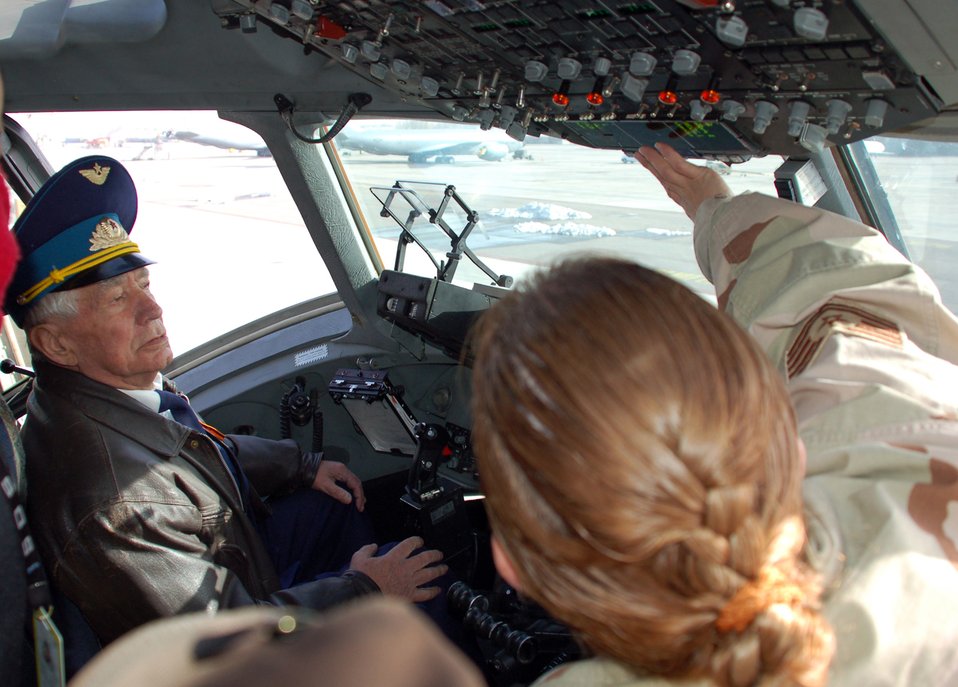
Airmen, 'Great Patriots' celebrate Veterans Day

Tech. Sgt. Renee King explains the cockpit controls for a C-17 Globemaster III to retired Soviet Union Army Col. Vasili Steiniko Nov. 12 at Manas Air Base, Kyrgyzstan. Colonel Steiniko was one of a dozen Kyrgyzstan-area World War II veterans honored at the base on Veterans Day. Sergeant King is with the 817th Expeditionary Airlift Squadron, Det. 1.